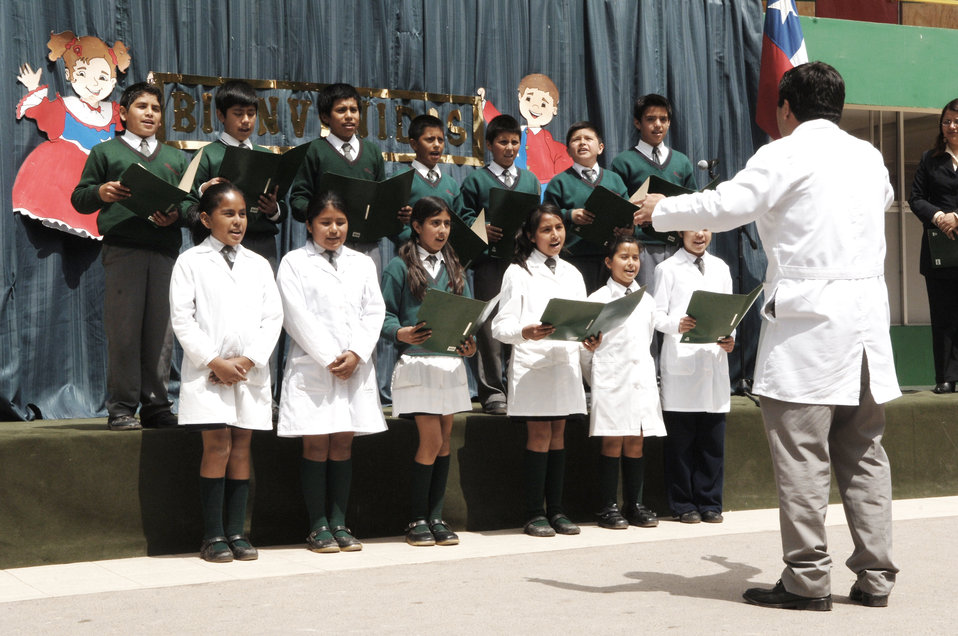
U.S., Chilean airmen visit school

Students of Colegio Macaya perform a song as part of a welcoming ceremony for visiting U.S. and Chilean air force airmen Oct. 27, 2009, in Alto Hospicia, Chile.